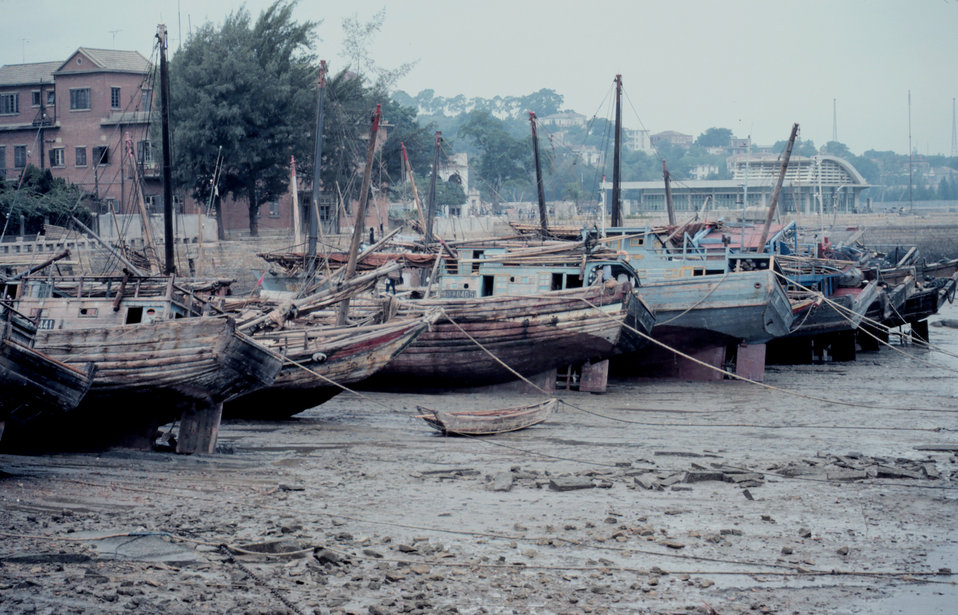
Chinese junks in the mud at low tide.